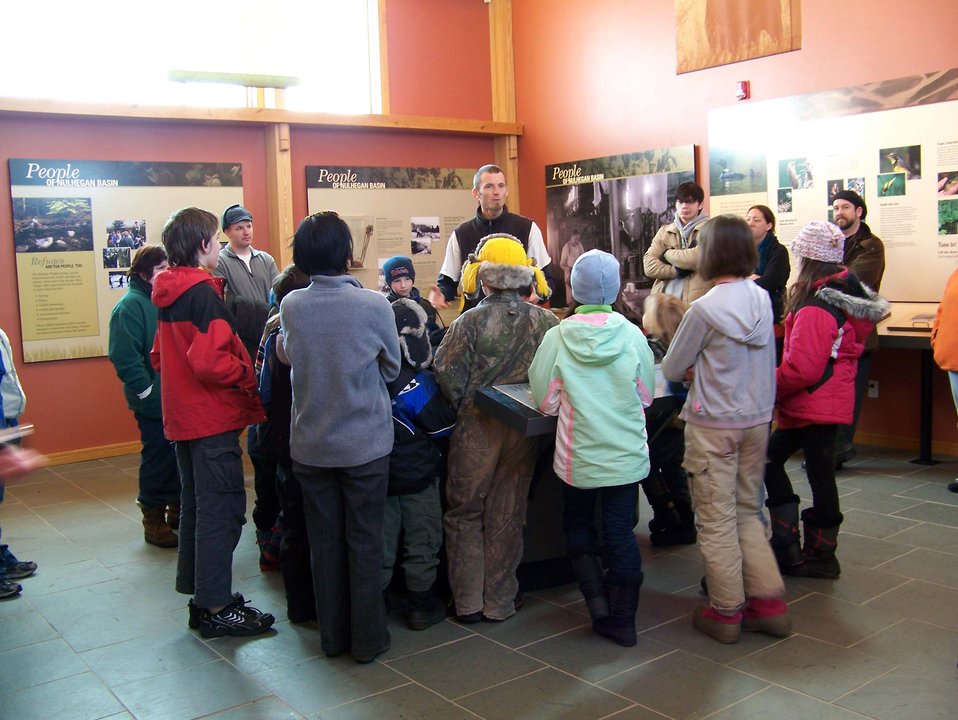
Siskin Ecological Adventures

Nulhegan Basin Division, Silvio O. Conte National Wildlife Refuge.